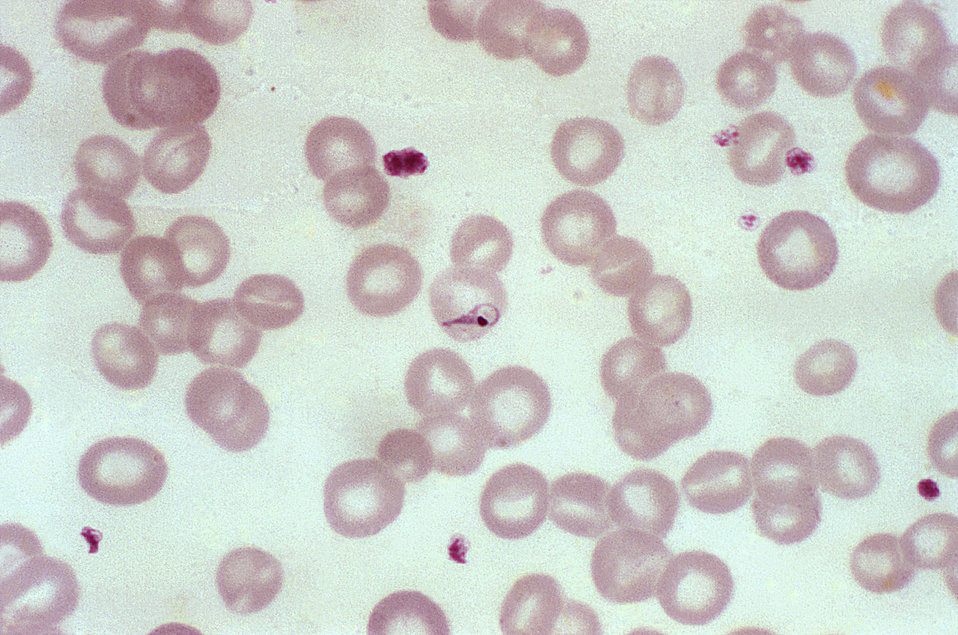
This photomicrograph of a blood smear shows RBCs infected with Plasmodium falciparum during the parasite's ring stage.